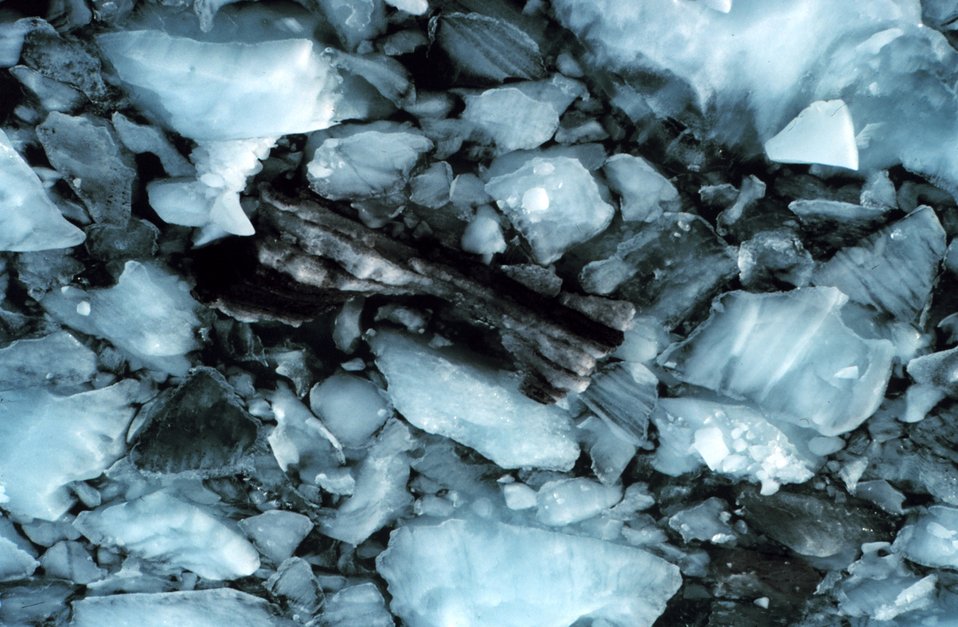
Glacial ice chunks in Icy Bay.